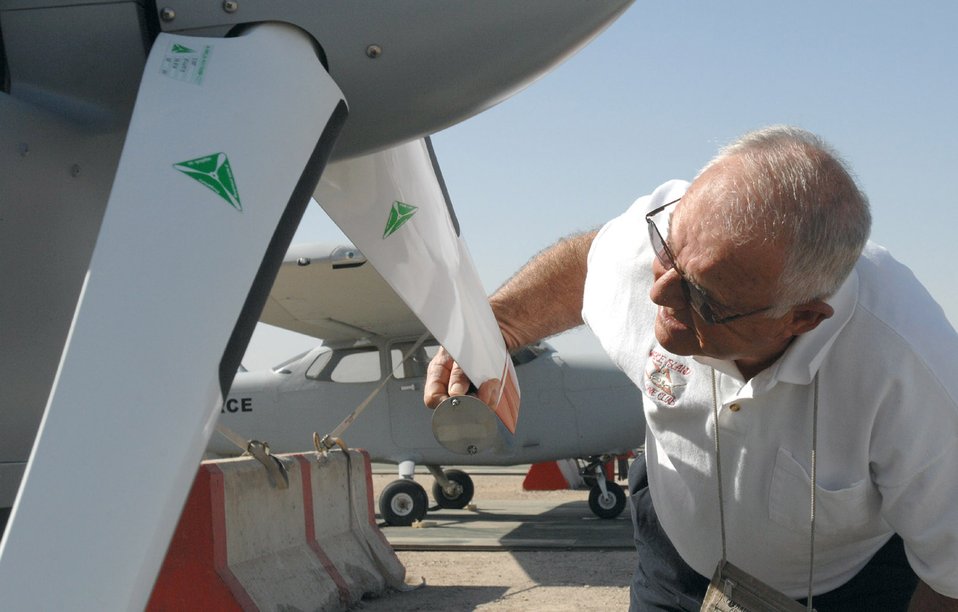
Retired Vietnam pilot supports war in Iraq

Retired Army Lt. Col. Lott Lawson inspects a Cessna 172 aircraft March 29 Kirkuk Air Base, Iraq. He is a site manager for the maintainence of Iraqi air force aircraft. As coalition forces continue reaching benchmarks to rebuild the Iraqi air force, this former U.S. Army helicopter has helped foreign pilots earn their wings throughout his military and civilian career during training programs in Vietnam, Saudi Arabia and Afghanistan.